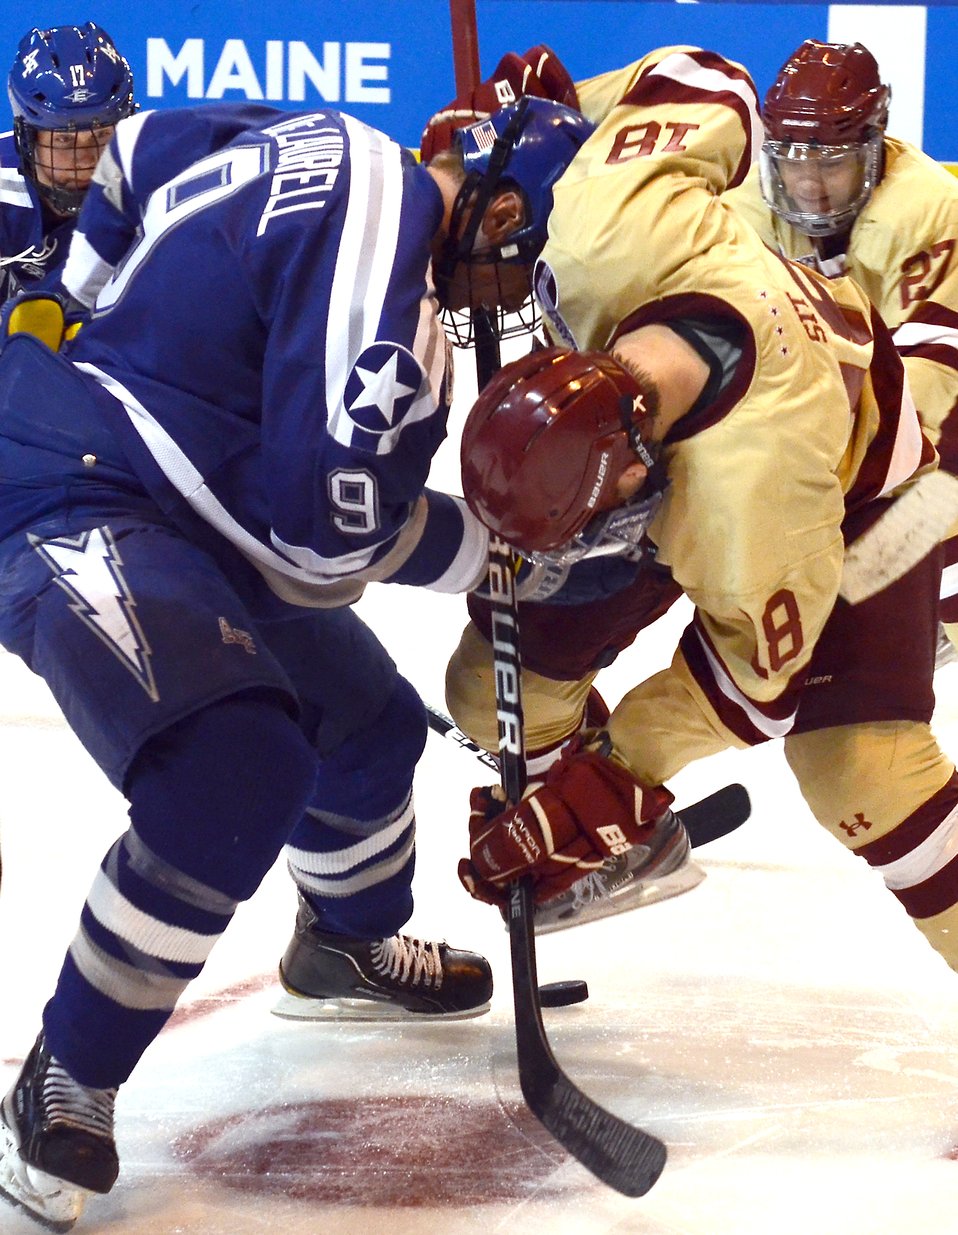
Falcons fall to Eagles in another tournament heartbreaker

Kyle DeLaurell, left, and Michael Sit face off during the NCAA Hockey Championship Tournament in Worcester, Mass., March 24, 2012. This was the Air Force Academy Falcons' fifth trip to the tournament in the last six years. DeLaurell is with the Falcons and Sit is with the Boston College Eagles.